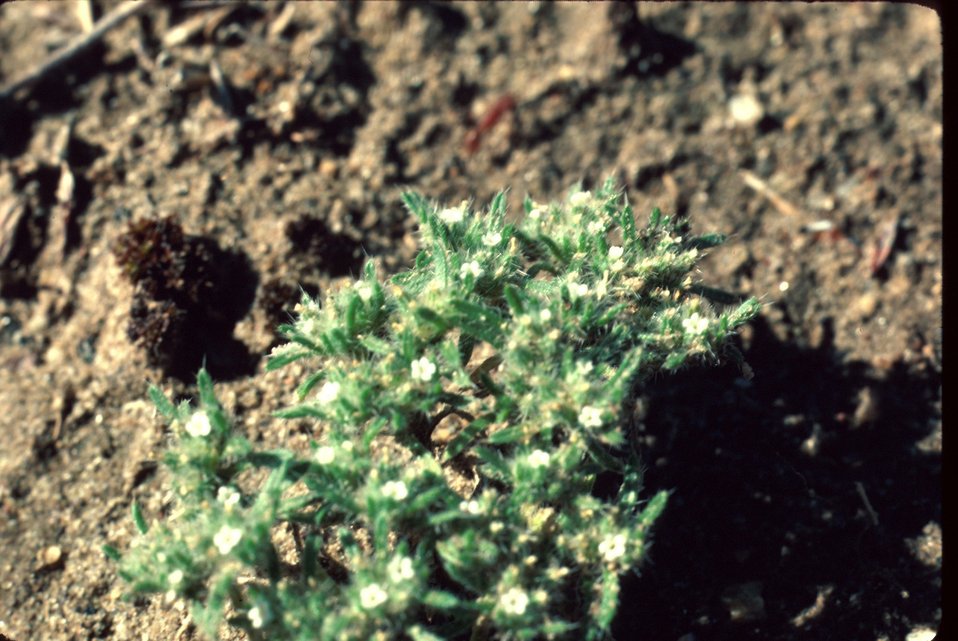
Cryptantha circumscissa Popcorn flower Wildflower